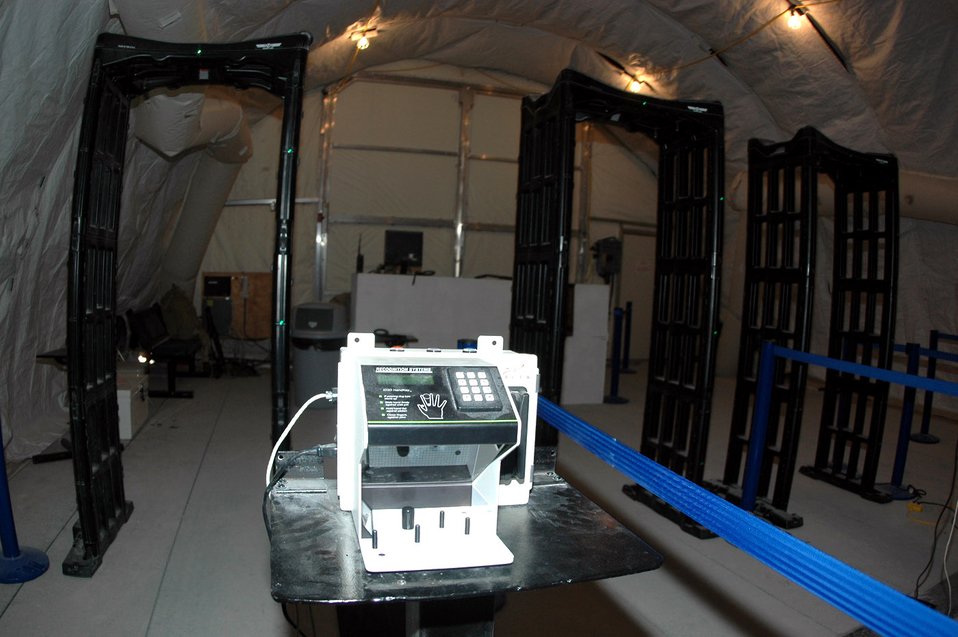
Biometric database offers tighter security

A Defense Biometric Identification Database System has been installed at a base in Southwest Asia to help make operations there safer and more secure. The new system allows for tighter security while processing people on and off base more quickly.